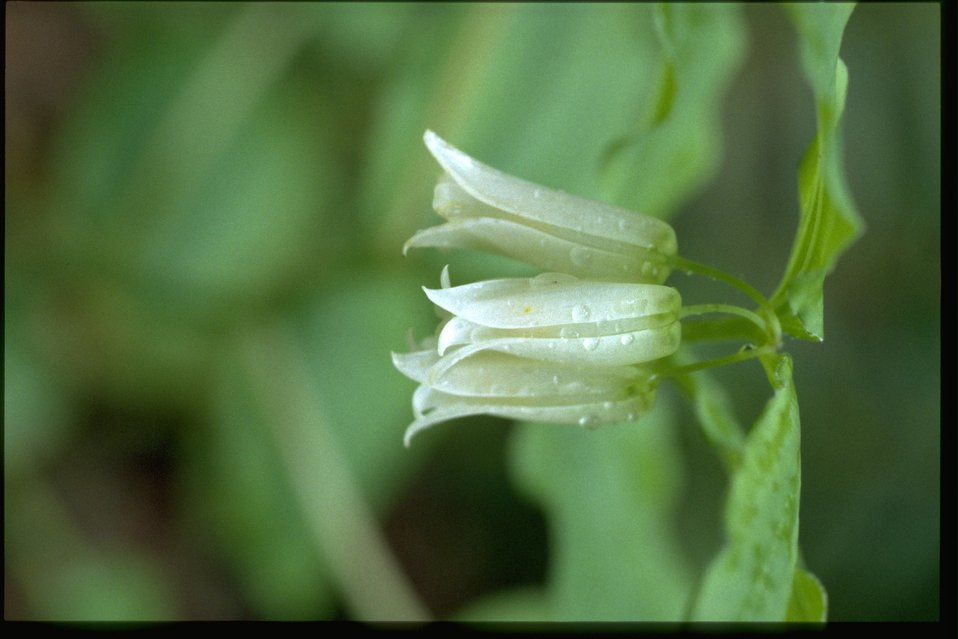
Closeup shot of Disporum smithii.